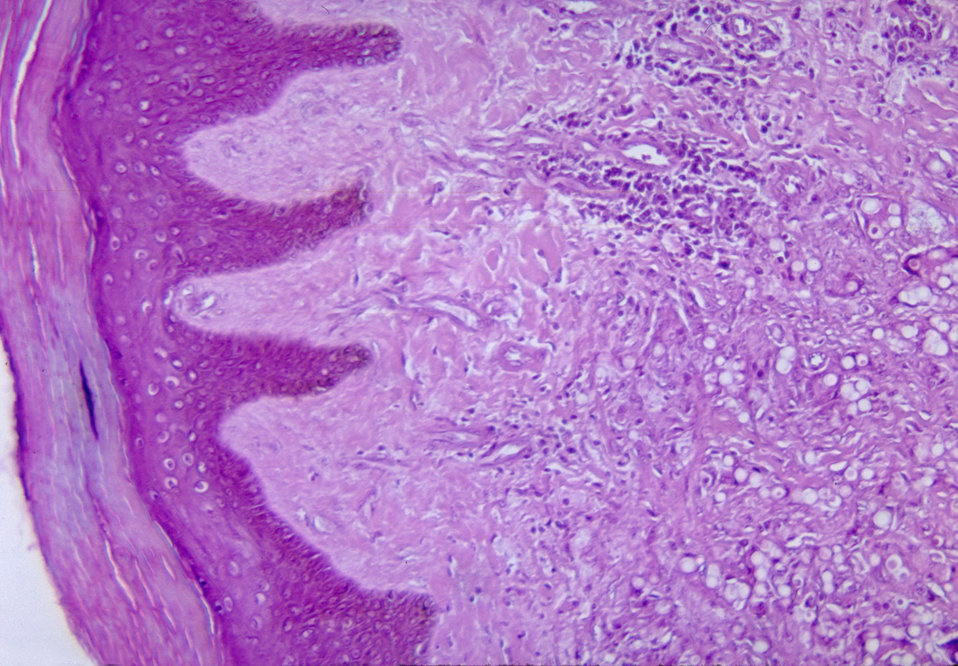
This micrograph depicts the histopathologic changes associated with lobomycosis of the skin.